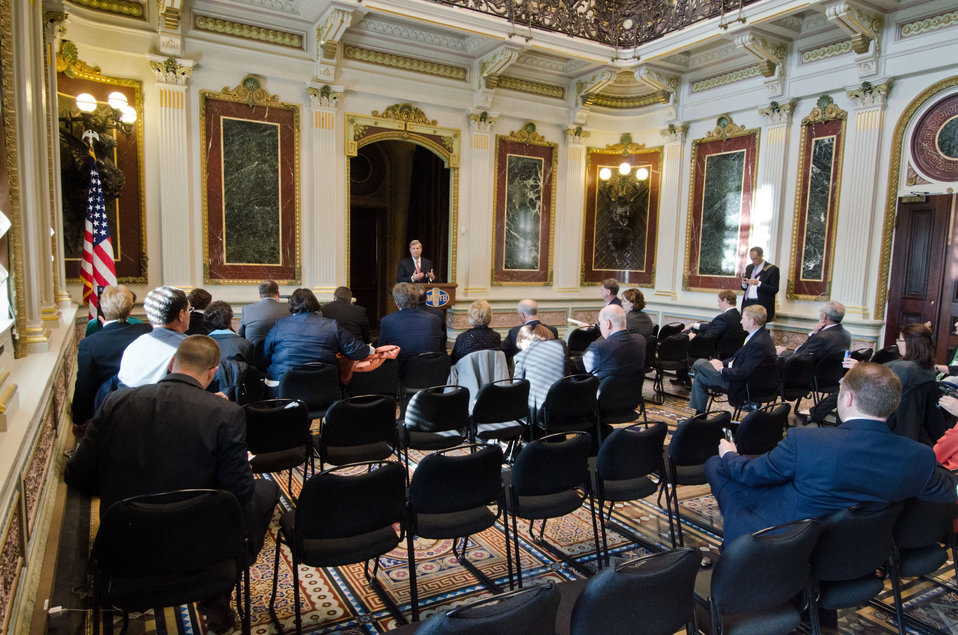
Agriculture Secretary Tom Vilsack discussed the strength of the rural economy at the spring National Association of Farm Broadcasters (NAFB), “Washington Watch” member retreat in Washington, D.C. This year the meeting was held in the Eisenhower Executive Office Building, Indian Treaty Room Tuesday, April 24, 2012 featuring United Sates Department of Agriculture and Obama Administration officials. This opportunity provides an occasion to highlight efforts to rebuild and revitalize rural America, including efforts for the agricultural community. NAFB is the recognized and trusted source of agricultural and rural lifestyle information for America with approximately 200 members who broadcast via radio in nearly every state in the country.